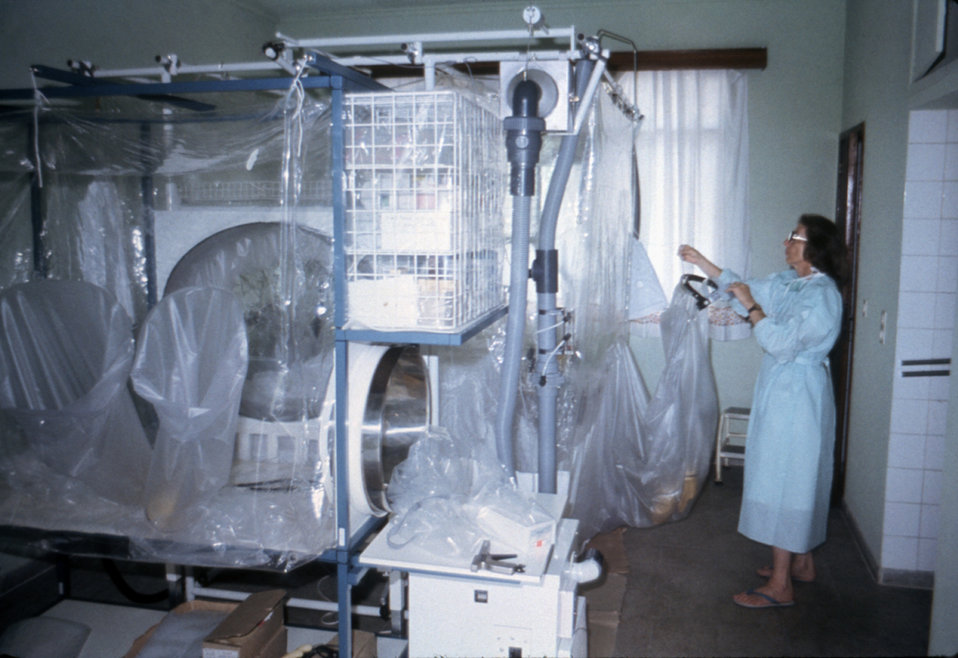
This was Dr. Margaretha Isaacson, a South African virologist, shown adjusting plastic isolators used to treat Ebola patients in a Kinshasa, Zaire hospital during the country's 1976 outbreak.